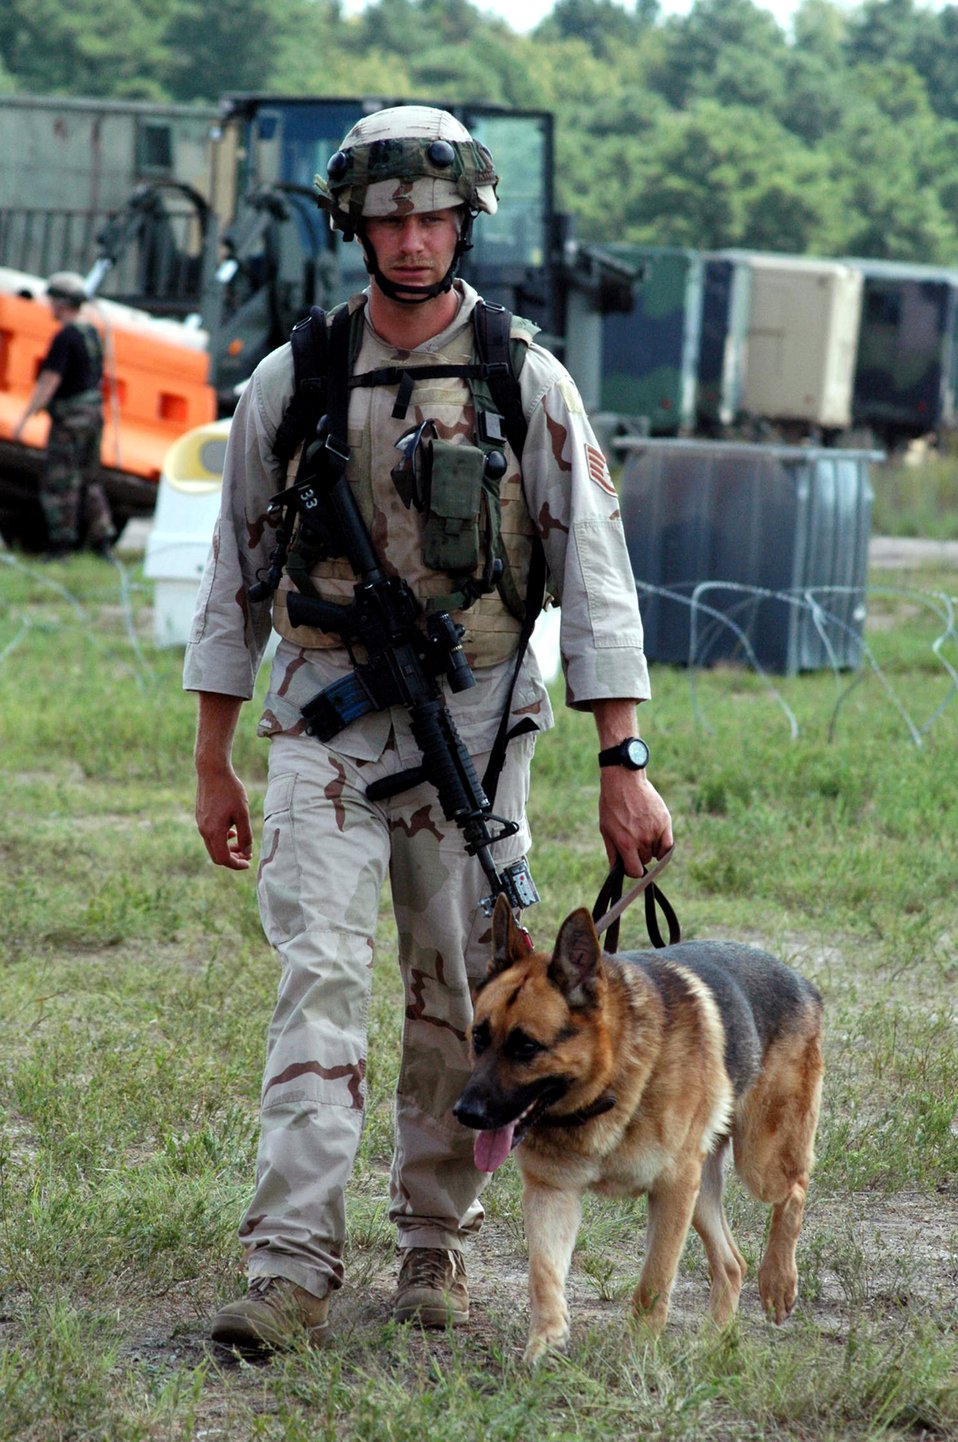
After one year, Phoenix Warrior course soaring high

Staff Sgt. Andrew Goligowski and his military working dog, Endy, participate in a scenario Aug. 28 during Air Force Exercise Eagle Flag 07-6 at Naval Air Engineering Station Lakehurst, N.J. They were Phoenix Warrior students participating in the exercise. The exercise is operated by the U.S. Air Force Expeditionary Center's 421st Combat Training Squadron from Fort Dix, N.J. Sergeant Goligowski and Endy are from the 319th Security Forces Squadron at Grand Forks Air Force Base, N.D.